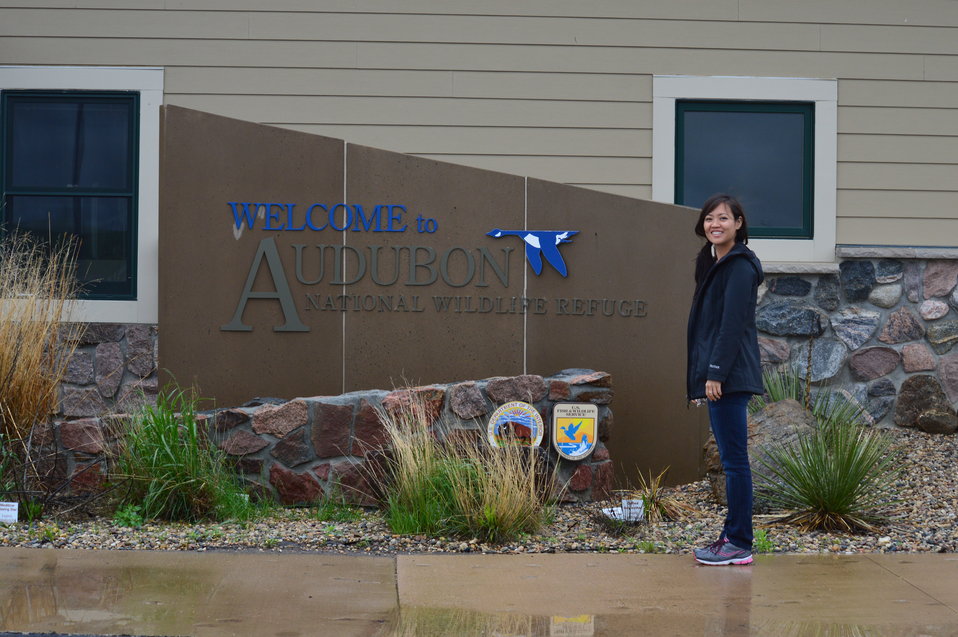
Welcome to Audubon